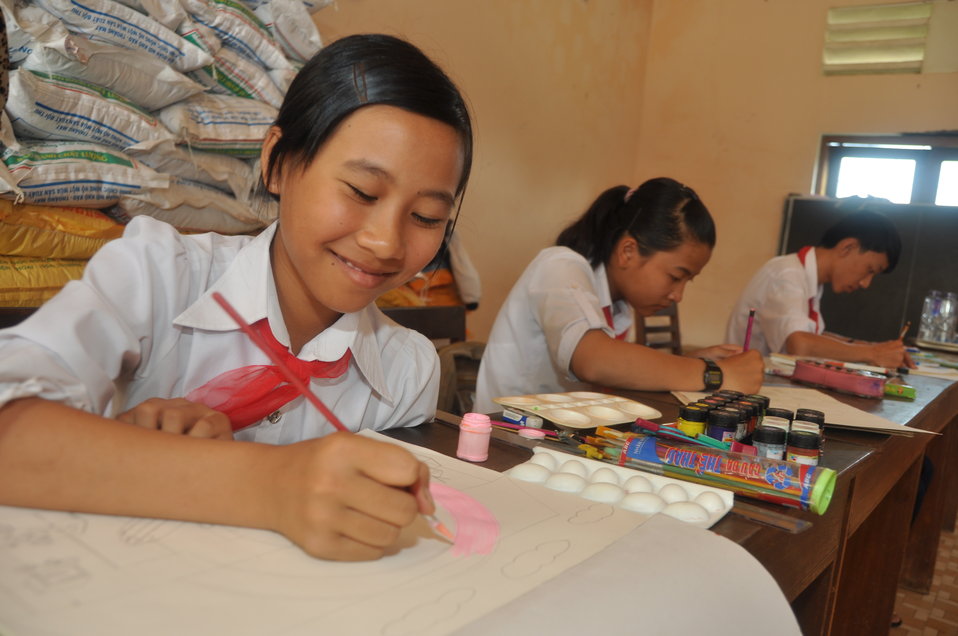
Students in Kon Tum create artwork about the importance of eye care